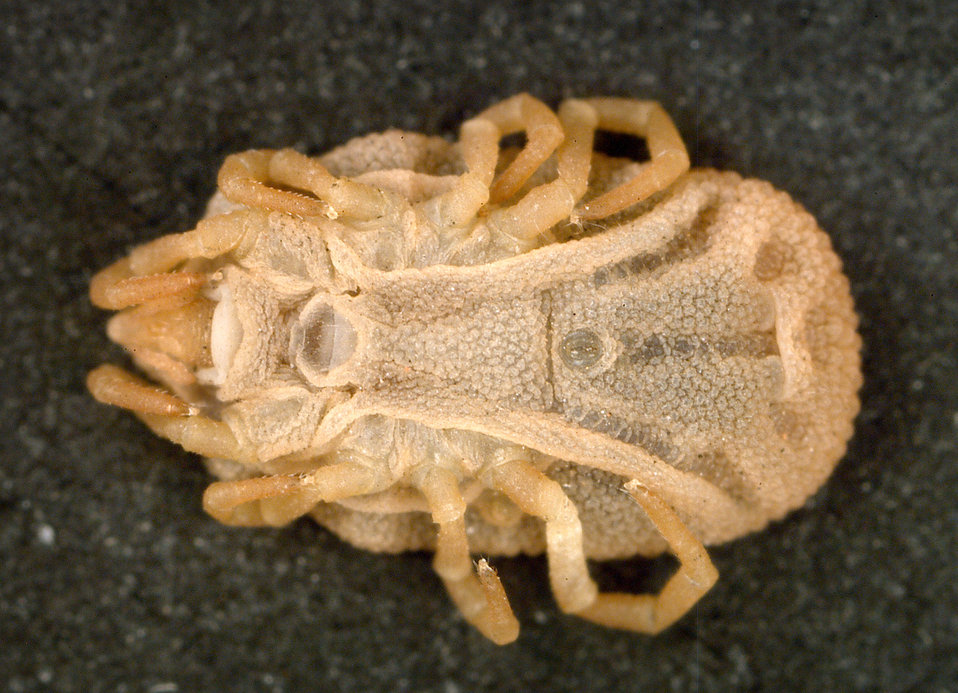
This is a ventral view of the 'soft tick' Carios kelleyi, formerly Ornithodoros kelleyi, or the 'Bat Tick'.